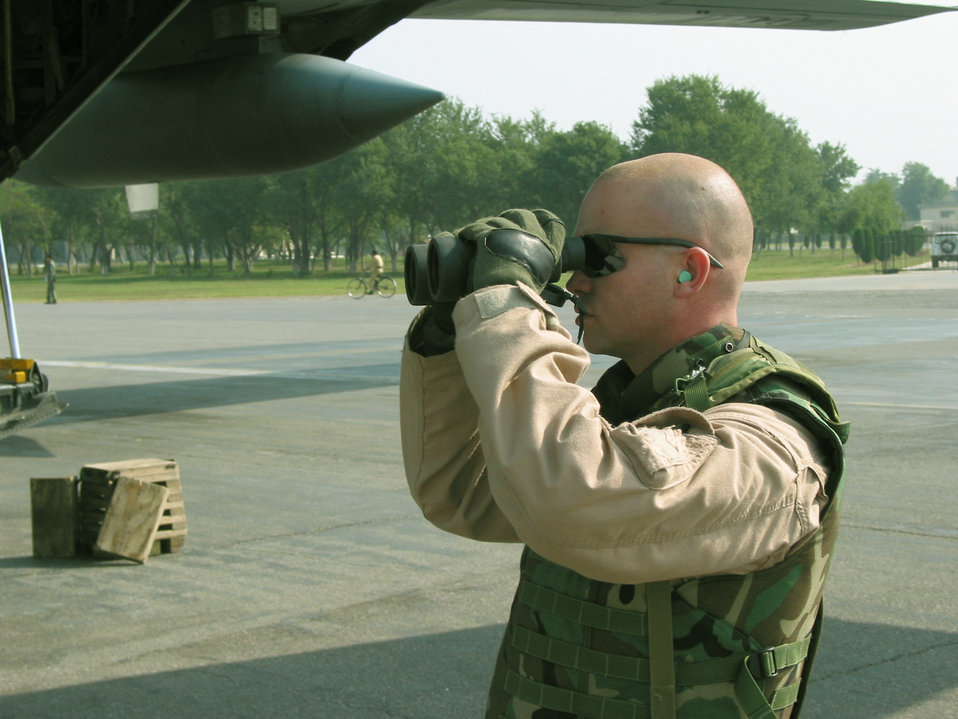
Fly Away

MANAS AIR BASE, Kyrgyzstan -- Staff Sgt. Robert Rose scans for threats in the forest surrounding an airfield that has no U.S. security. Rose helped design a two-day course to prepare security forces airmen here for aircraft- and aircrew-protection missions downrange.